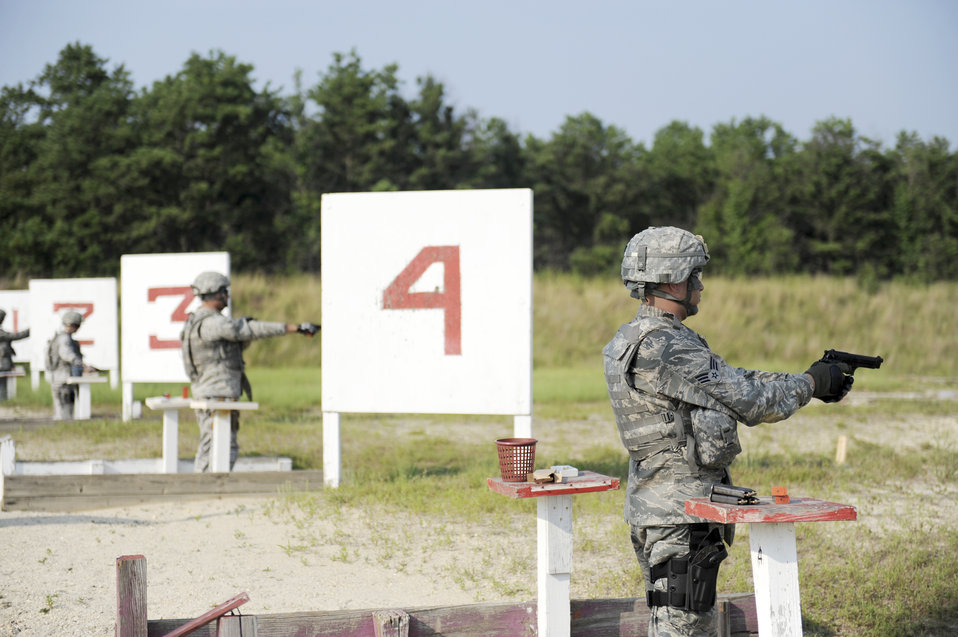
Airmen prepare for deployment

Senior Airman Brian Ybarbo (right) prepare to fire during 9mm familiarization training Aug. 10 at Fort Dix, N.J. Combat Skills Training prepares Airmen for Joint Expeditionary Tasking combat roles augmenting the U.S. Army in support of operations Enduring and Iraqi Freedom. Airmen Ybarbo is a still photographic journeyman assigned to the 99th Air Base Wing Public Affairs Office at Nellis Air Force Base, Nev.